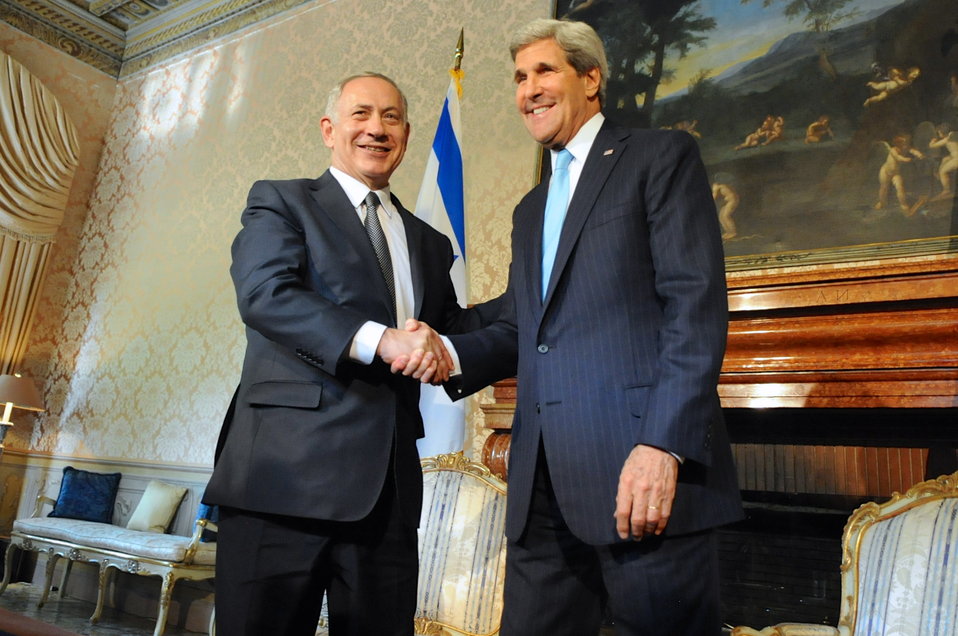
Secretary Kerry Shakes Hands With Israeli Prime Minister Netanyahu

U.S. Secretary of State John Kerry shakes hands with Israeli Prime Minister Benjamin Netanyahu at the conclusion of a joint photo spray in Rome, Italy, on October 23, 2013.